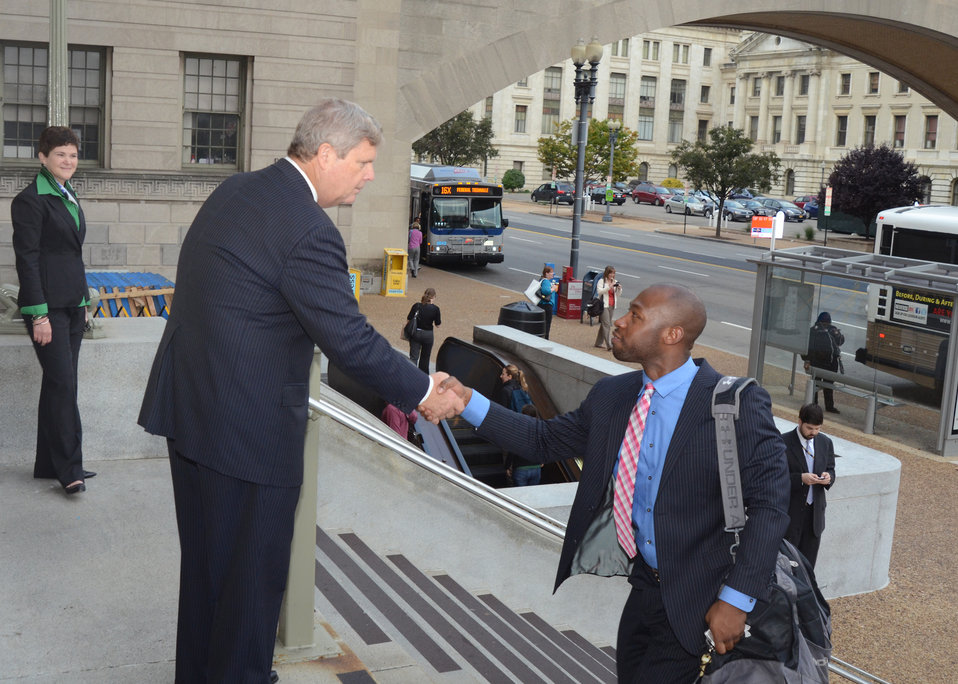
Agriculture Secretary Tom Vilsack welcomes employees back to work on the steps of the U.S. Department of Agriculture's South Building on Thursday, Oct. 18, 2013. (Agriculture Deputy Secretary Krysta Harden stands to the left of the Secretary).